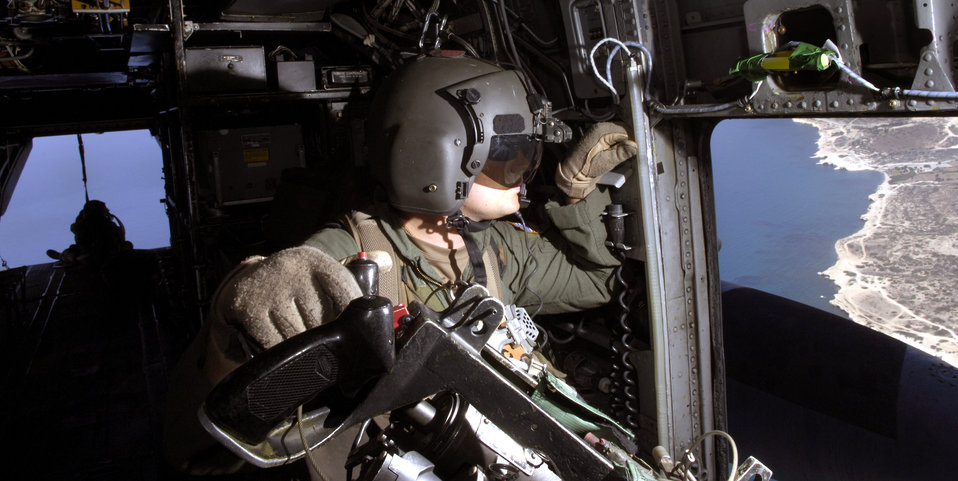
Lebanon operations

CYPRUS (AFPN) -- Tech. Sgt. John Stott checks the left side of a MH-53M Pave Low helicopter in flight July 24. Sergeant Stott is an aerial gunner with the 352nd Special Operations Group at Royal Air Force Mildenhall, England, and is deployed here to help with the transportation of American citizens from Lebanon.